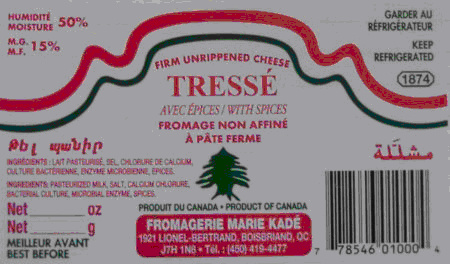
RECALLED - Cheese

December 29, 2011 - Consumer Alert for cheese and milk products due to Listeria monocytogenes contamination.